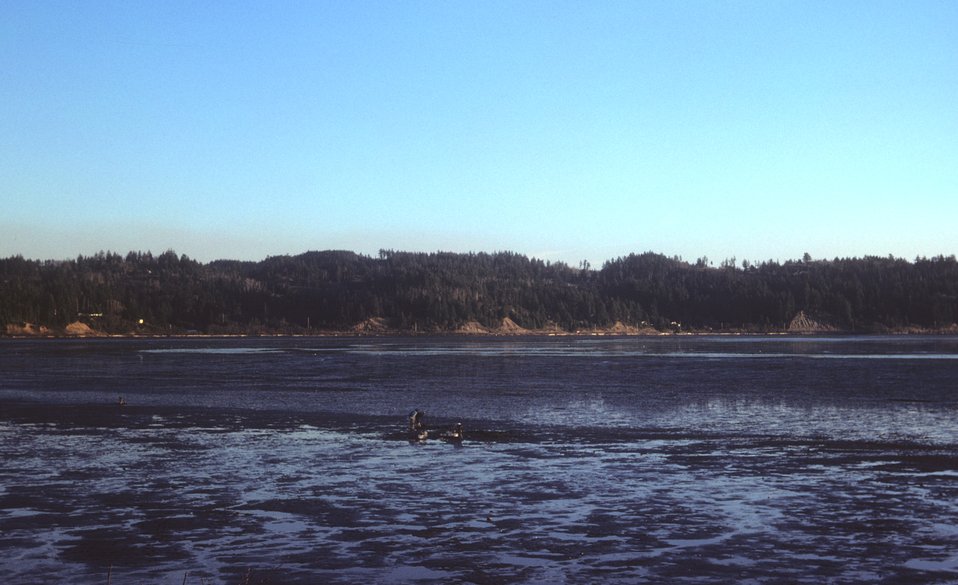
Mud flats and clammers at low tide